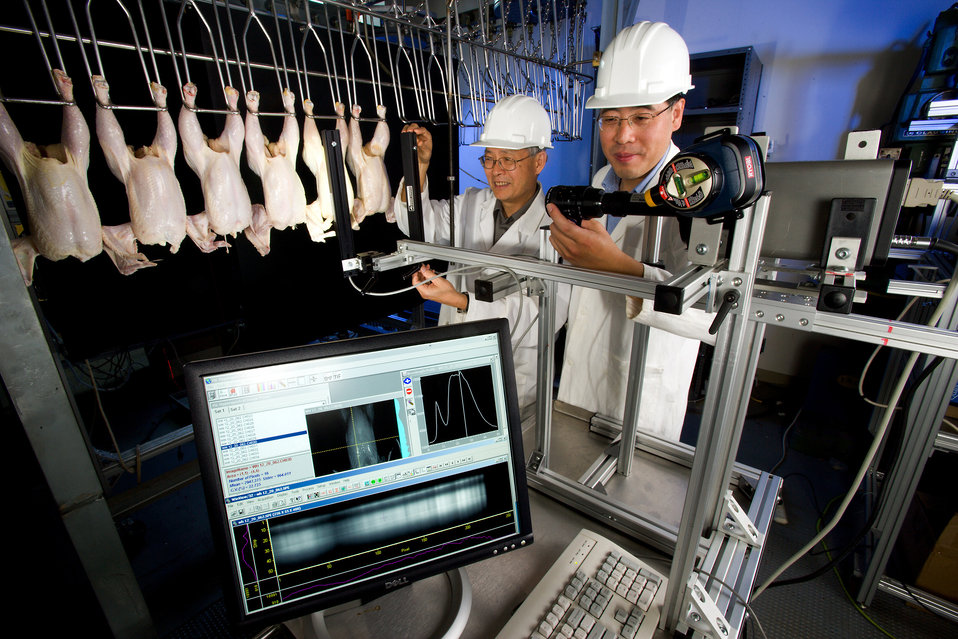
U.S. Department of Agriculture (USDA) Agricultural Research Service (ARS) agricultural engineers Yud-Ren Chen (left) and Keving Chao make adjustments to a prototype line-scan multispectral imaging system for food safety inspection of chickens.